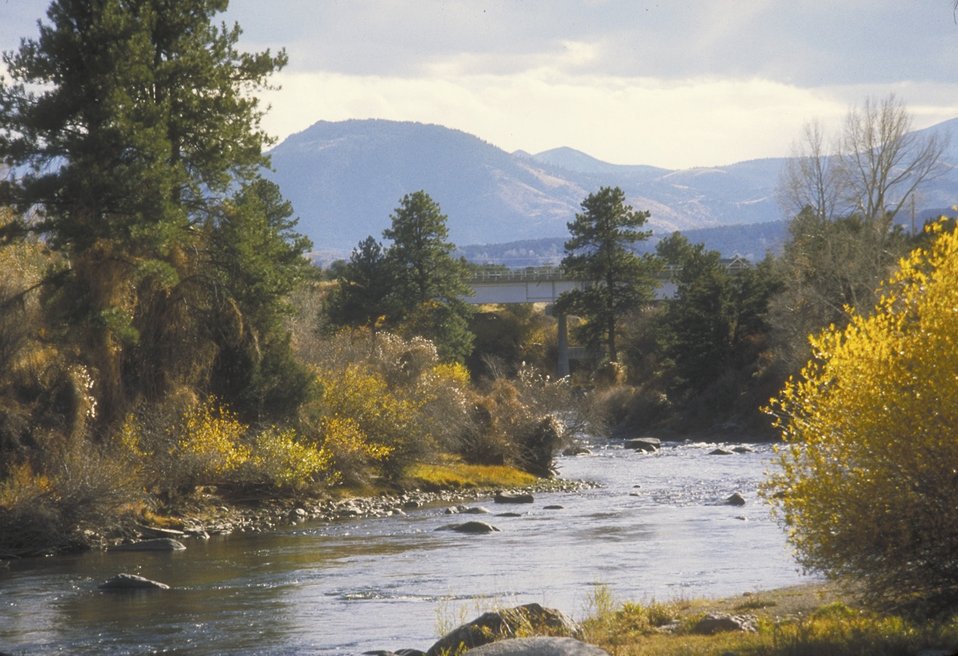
Scenic of the Arkansas River.